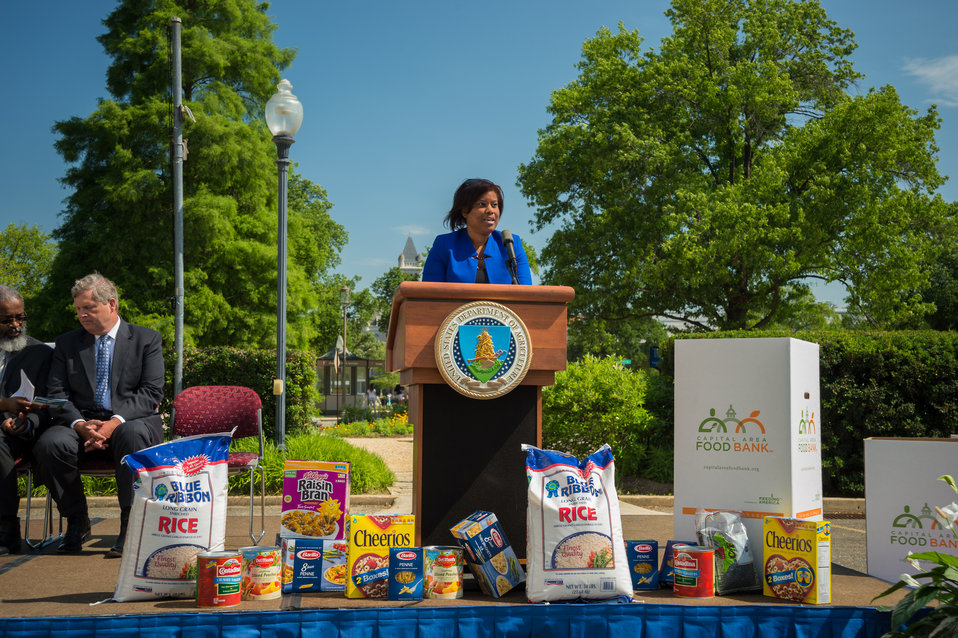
Karen Comfort, National Program Manager, Feds Feed Families welcomed United States Department of Agriculture (USDA) cabinet members, employees and visitors to the 2014 National Feds Feed Families Kick-Off at the USDA’s People’s Garden in Washington, DC, Mon. Jun. 2, 2014. The theme of this year’s event is, “Help Knock Out Hunger.” On stage behind Ms. Comfort is Agriculture Secretary Tom Vilsack.